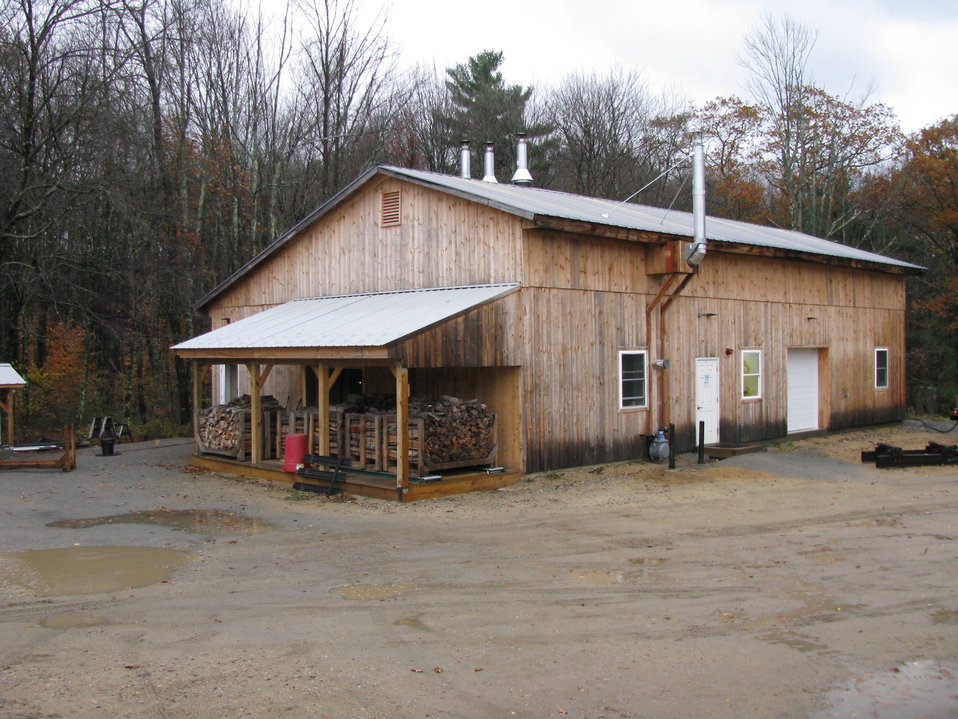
Harvard Forest staff of the U.S. Forest Service Northeastern Area renovated a pole barn to house a boiler room and modern wood shop. The new boiler room (left side of the building) contains three wood gasification boilers, a 2,500-gallon thermal storage tank, a propane-fired backup boiler, associated pumps, and system controls. The sloped roof on the left of the building provides a dry storage area for racks of firewood prior to loading in the boilers.